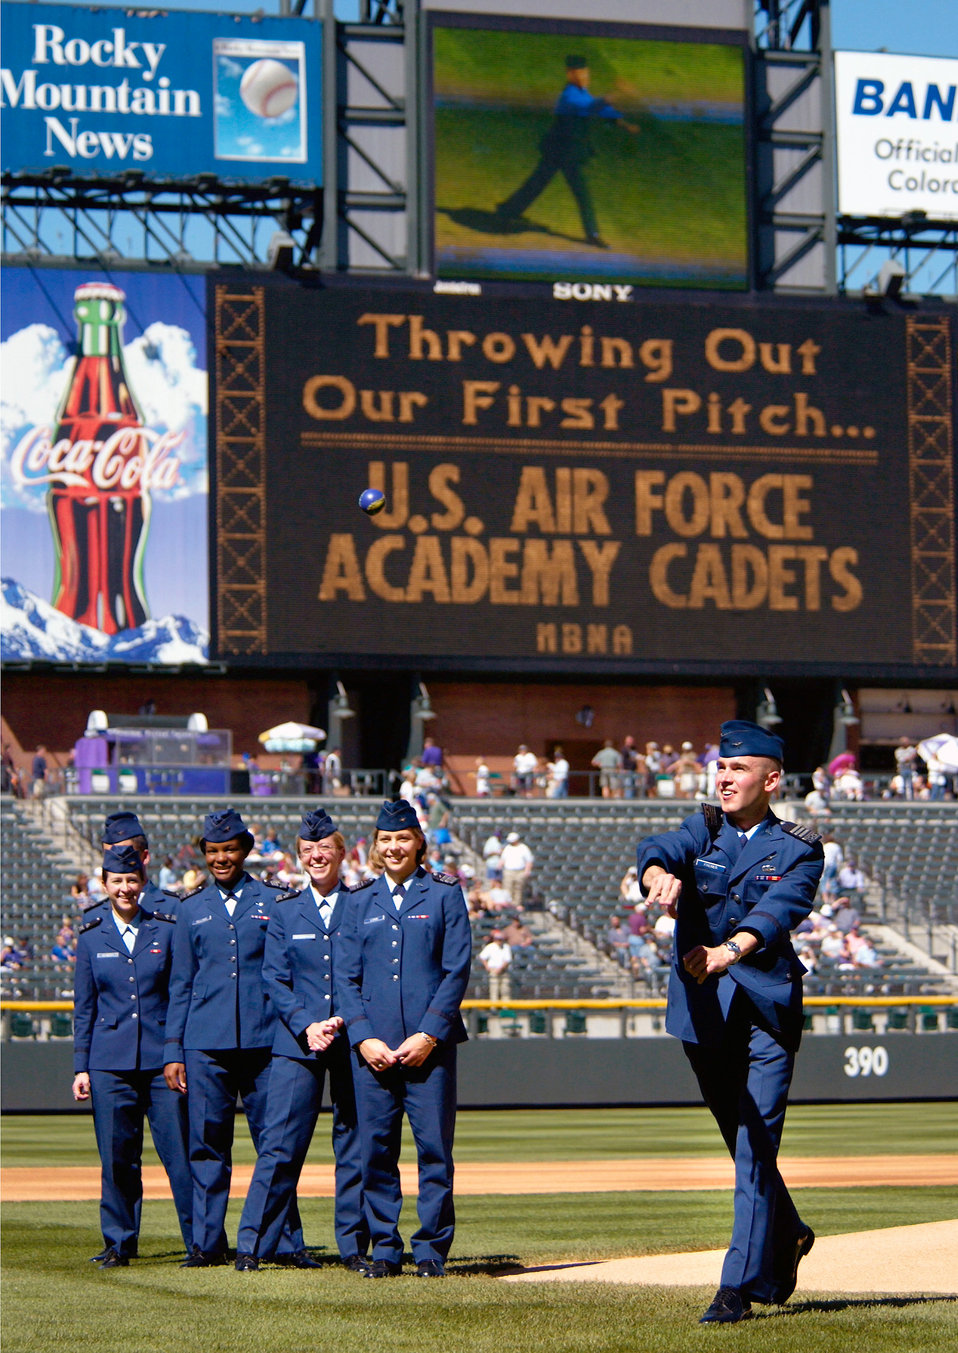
Ceremonial first pitch

DENVER -- Cadet 1st Class Joe Fixemer throws out the ceremonial first pitch of the Colorado Rockies' last home game of the season here Sept. 25. Pictured from left to right are Cadets 3rd Class Scott Van De Water and Jill Dehnert, Cadets 2nd Class Tiffany Williams and Jessica Muterspaugh, and Cadet 1st Class Becky Lewis.